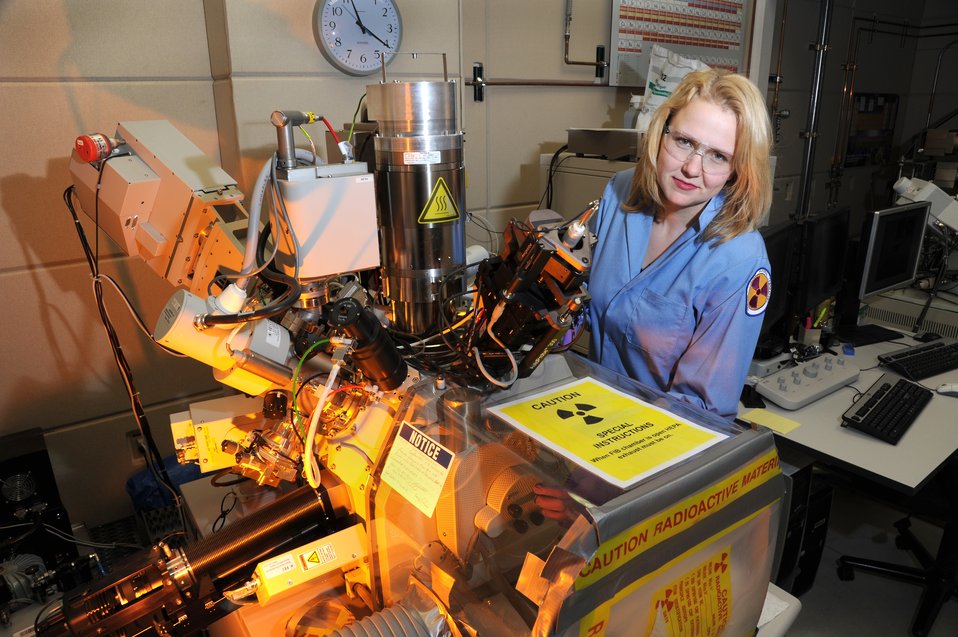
SOPHISTICATED MICROSCOPY TECHNOLOGY HAS BEEN ADAPTED FOR EXAMINATION IF IRRADIATED NUCLEAR FUEL AND MATERIALS AT IDAHO NATIONAL LABORATORY'S MATERIALS AND FUELS COMPLEX ANALYTICALLY LAB.